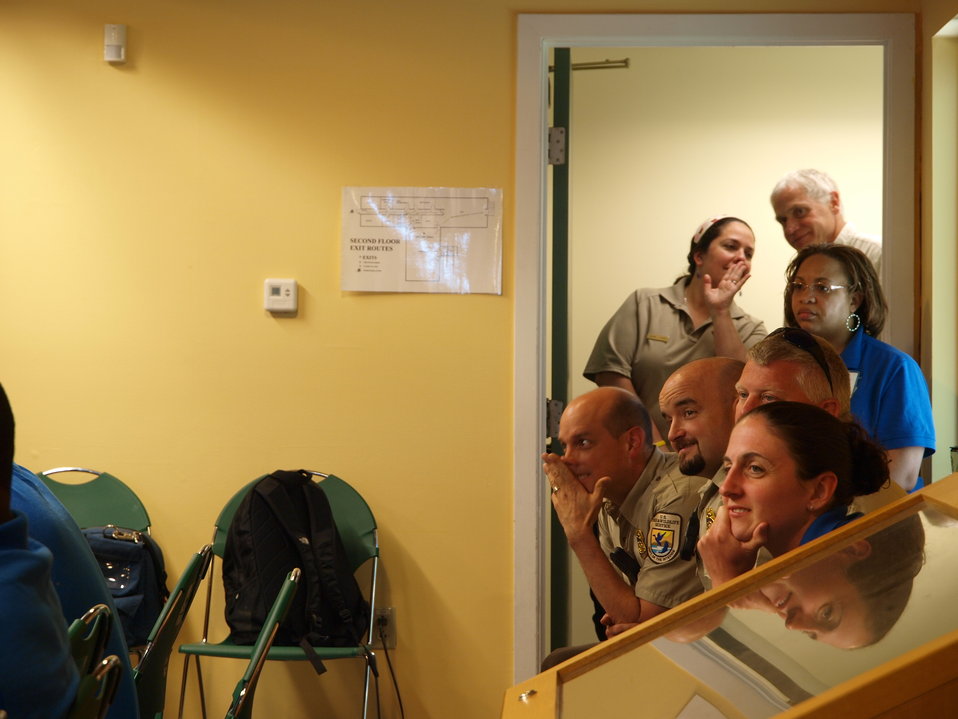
Challenge Project Presentations

Eastern Massachusetts Complex and U.S. Fish and Wildlife staff listen closely to the student presentations of their challenge projects.